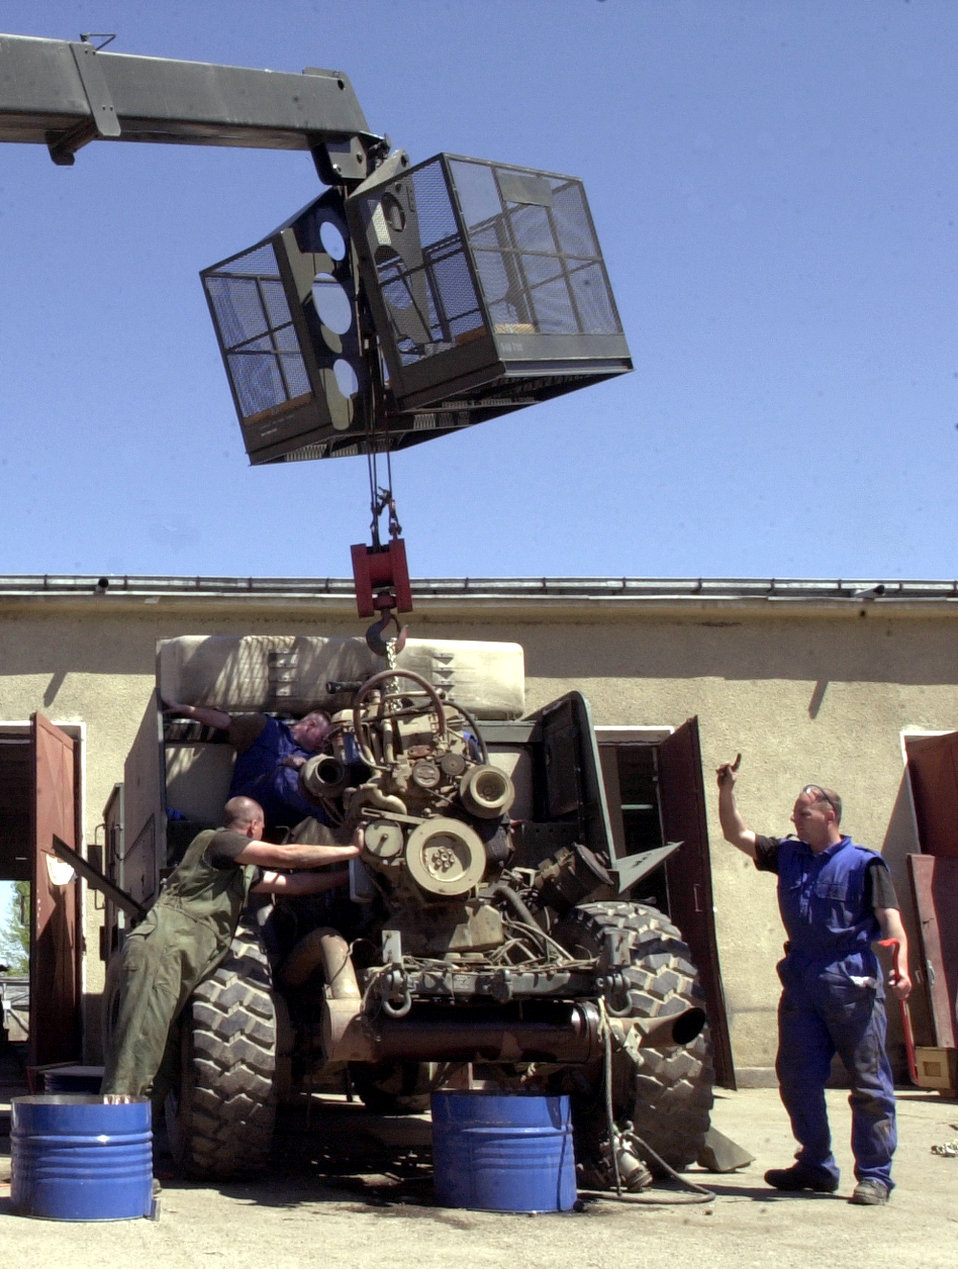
Need a lift?

OPERATION IRAQI FREEDOM -- Staff Sgt. Steven Holloway directs a crane operator in lifting a 3,000-pound diesel engine from a fire truck while Senior Airman Michael Jackson steadies it. Both airmen are assigned to the 458th Expeditionary Logistics Readiness Squadron at Mihail Kogalniceanu, Romania.